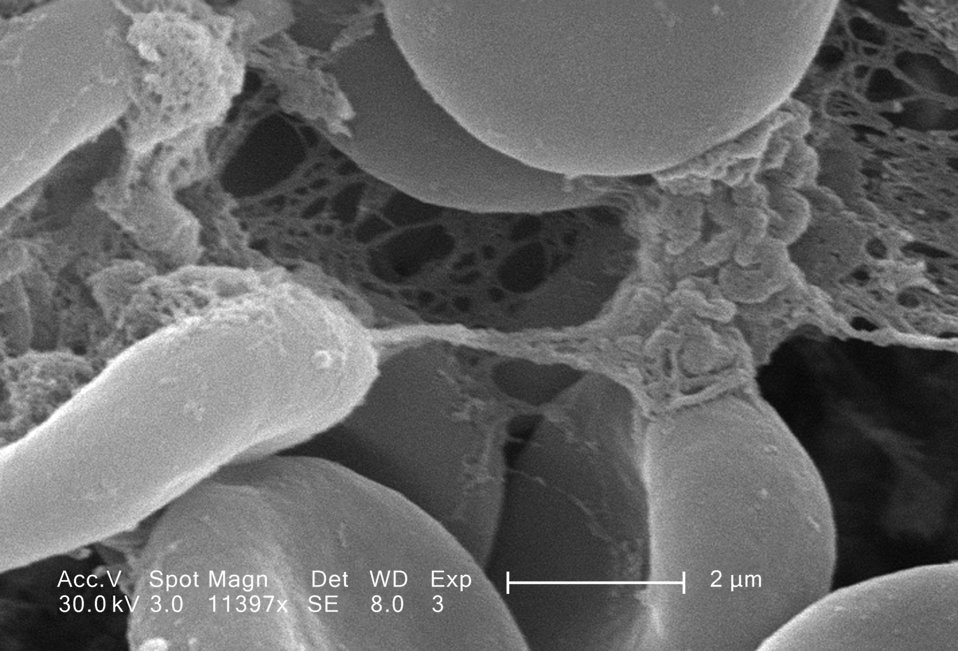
This highly enlarged scanning electron micrograph (SEM) depicted a closer look at the details exhibited by of number of red blood cells found enmeshed in a fibrinous matrix on the luminal surface of an indwelling vascular catheter; Magnified 11397x. In this instance, the indwelling catheter was a tube that was left in place creating a patent portal directly into a blood vessel.